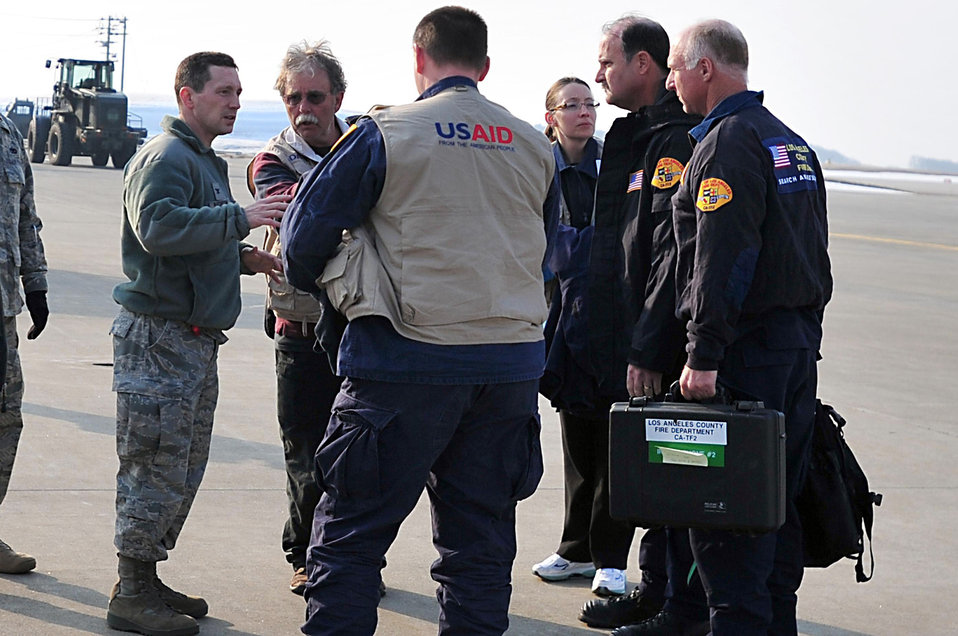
Search and rescue teams arrive at Misawa Air Base

Col. Michael Rothstein, 35th Fighter Wing commander, talks with United States Agency for International Development search and rescue team members on the flightline at Misawa Air Base, Japan, March 13, 2011. Teams from Los Angeles County Fire Department and Fairfax County, Va., Urban Search and Rescue arrived in support of Operation Tomodachi to assist with civil relief and recovery operations.